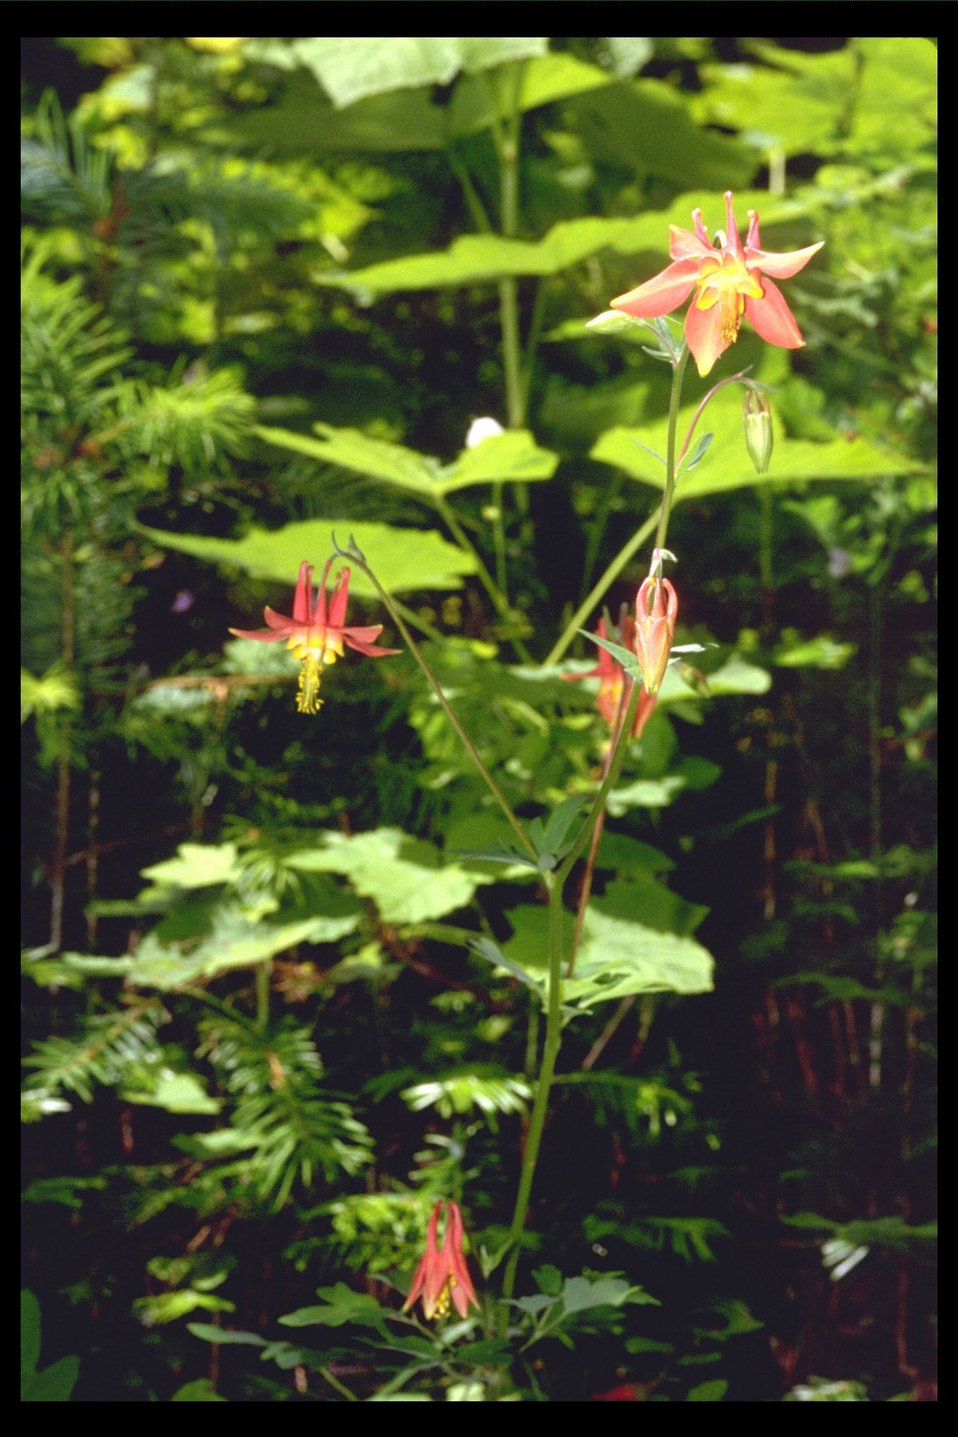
Western Columbine (Aquilegia formosa) found along Upper Creek Trail.